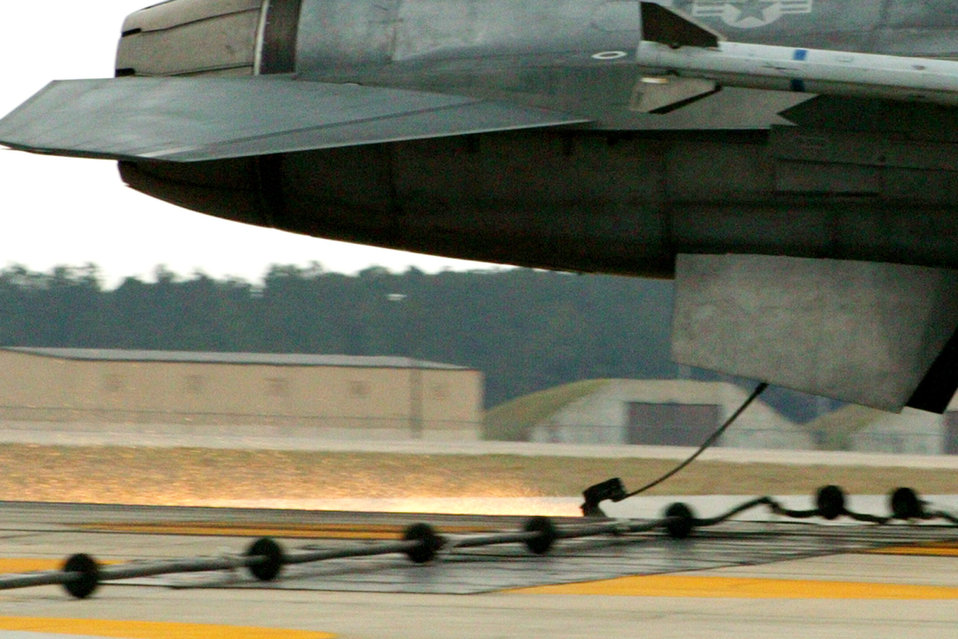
Arresting system stops aircraft safely

The hook from an F-16 Fighting Falcon slides in to grab the arresting system's cable.